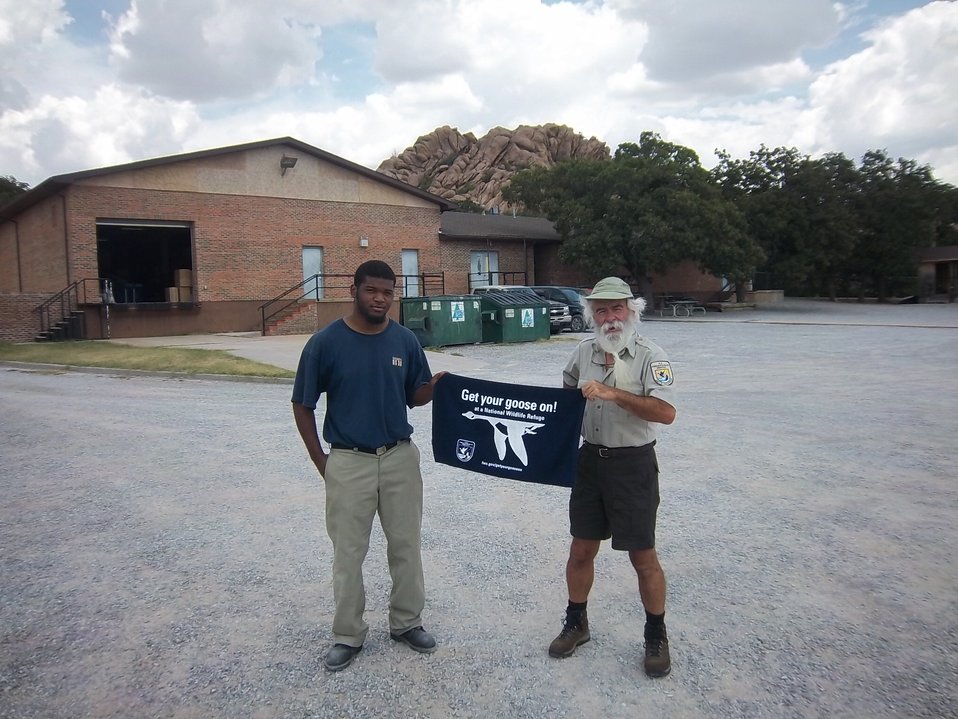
Get Your Goose On!

Wichita Mountains National Wildlife Refuge in Oklahoma.